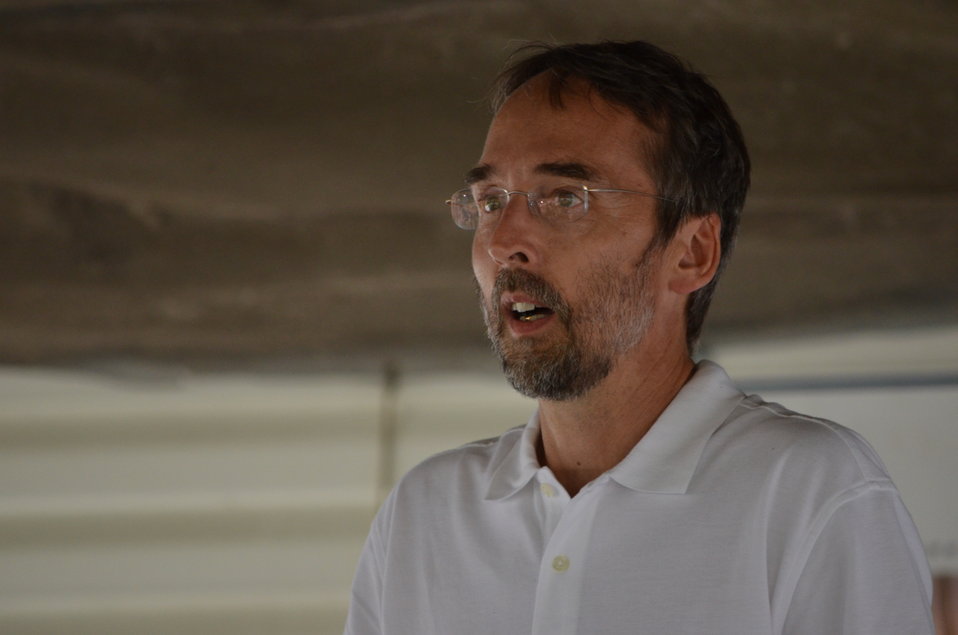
Joe Hautman addresses crowd as guest of honor.